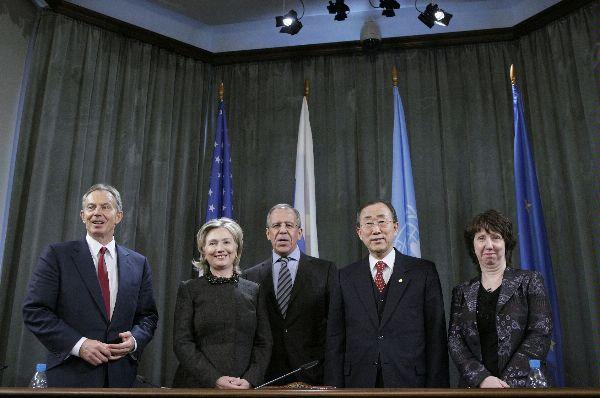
Secretary Clinton With Middle East Quartet

From left, former British Prime Minister Tony Blair, U.S. Secretary of State Hillary Rodham Clinton, Russian Foreign Minister Sergey Lavrov, U.N. Secretary General Ban Ki-moon and EU foreign policy chief Catherine Ashton pose for a photo after the Middle East Quartet news conferences in Moscow, Russia, March 19, 2010.